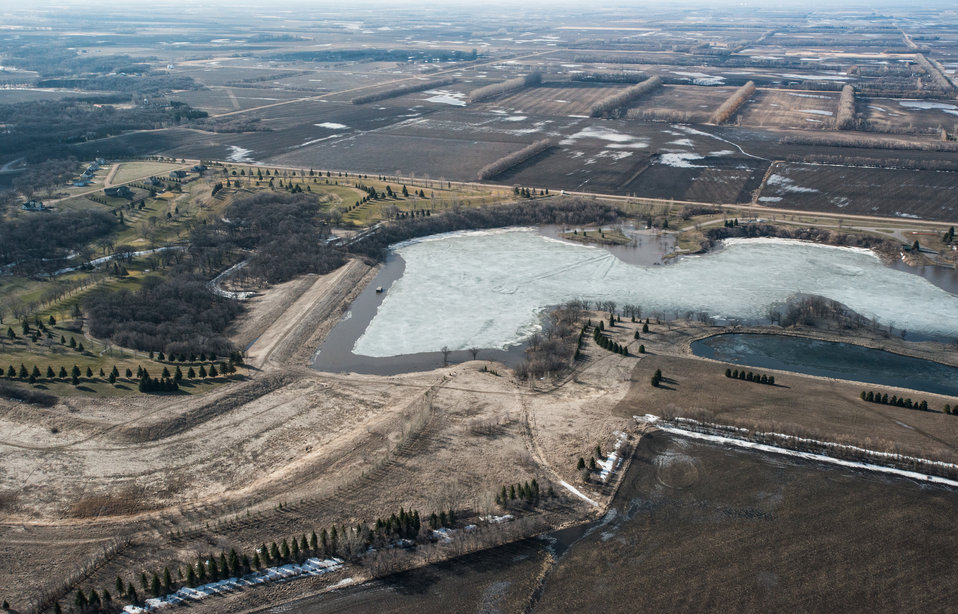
Larimore Dam, a Public Law PL83-566 Small Watershed Program, in Grand Forks County, ND, on Wednesday, May 1, 2013. The spillway is bound by a golf course and farmstead.